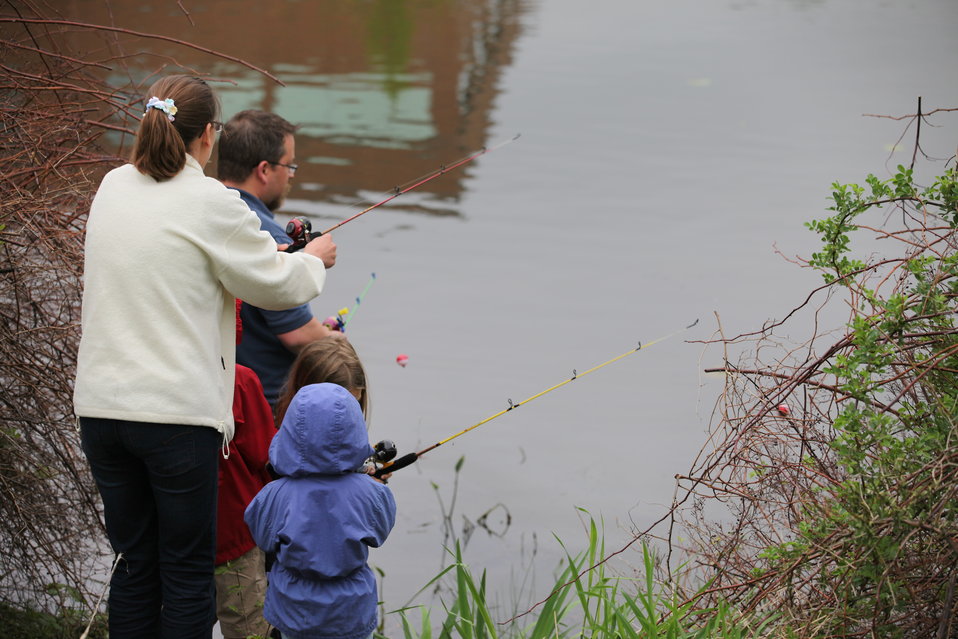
Fishing Derby